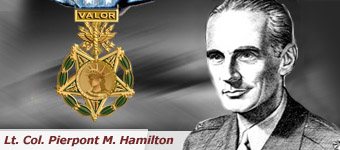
Lt. Col. Pierpont M. Hamilton volunteered for a perilous mission to go through enemy lines to convince the Vichy French to stop their hostilities and unite with the Allies with Col. Demas Craw. His actions saved untold American lives in the campaign to overtake French Morrocco, earning him the Medal of Honor along with Colonel Craw.